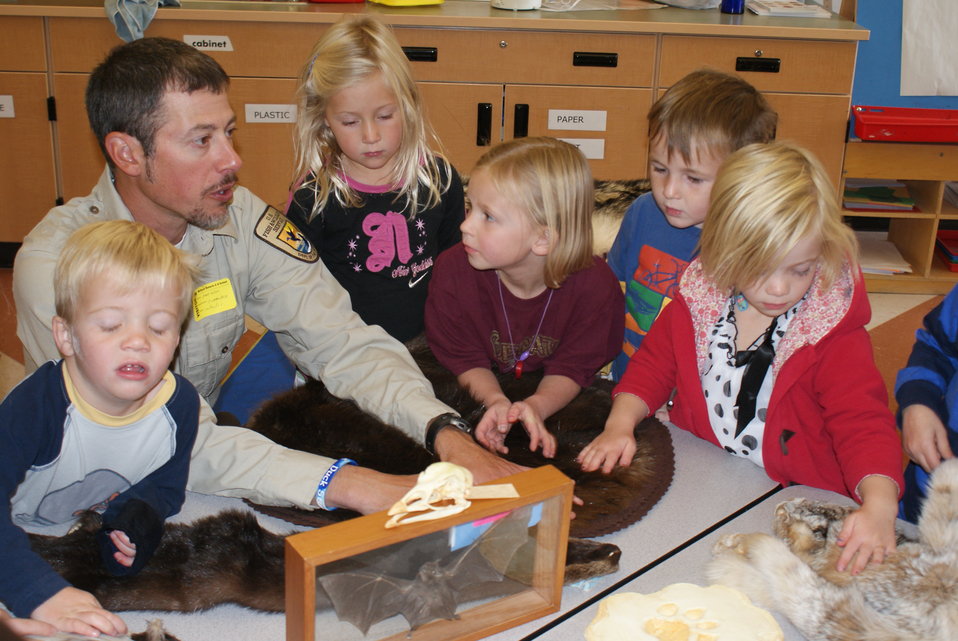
Scientists in the Community Program

U.S. Fish and Wildlife Service Mountain-Prairie Region Deputy ARD for External Affairs, Matt Kales, introduces early childhood education students at William Roberts Elementary School in Denver to some of Colorado's native and historic wildlife species.